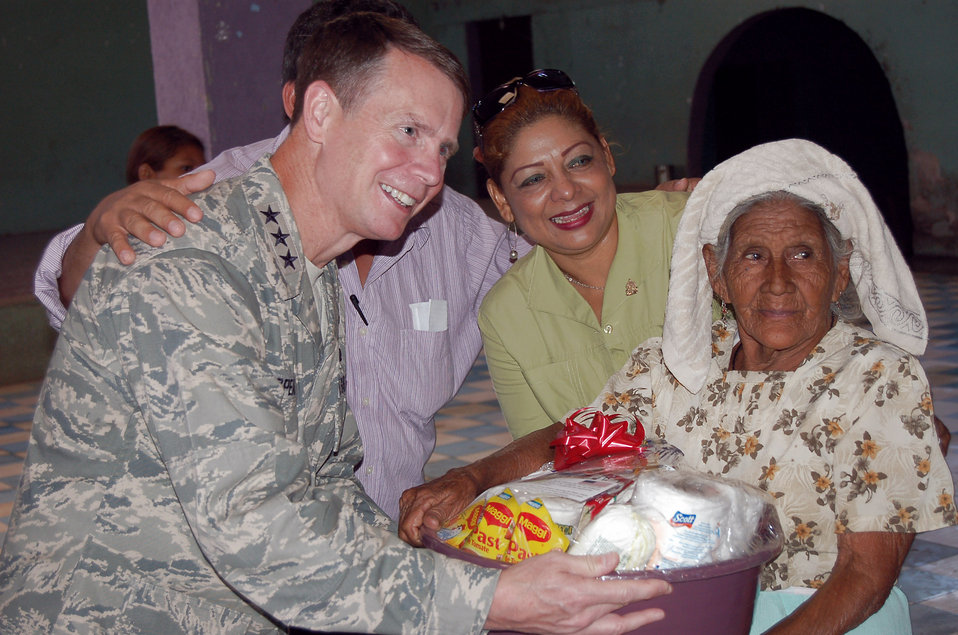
Southern Command, AF South Leadership visit deployed troops

Lt. Gen. Glenn Spears, the U.S. Southern Command deputy commander, hands a gift basket to a local of Ajuterique, Honduras, with Maria Martinez, governor of Comayagua as part of the Holiday Tour to Latin America.